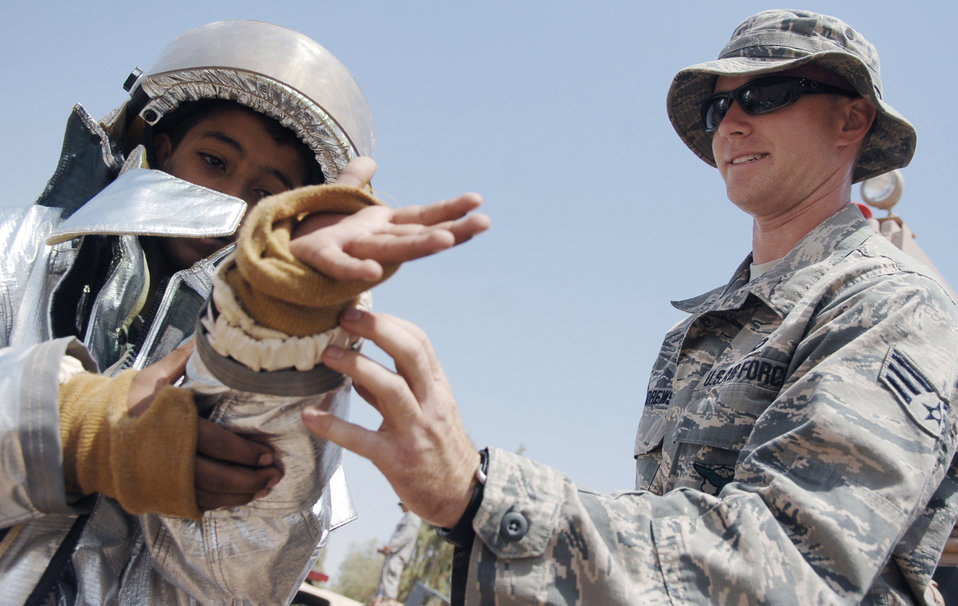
Servicemembers at Joint Base Balad host a health fair

Senior Airman Kevin Andrews helps an Iraqi child put on a firesuit Aug. 22 during a health fair at Joint Base Balad, Iraq. More than 30 Iraqi children attended the health fair. Airman Andrews is a firefighter assigned to the 332nd Expeditionary Civil Engineer Squadron.